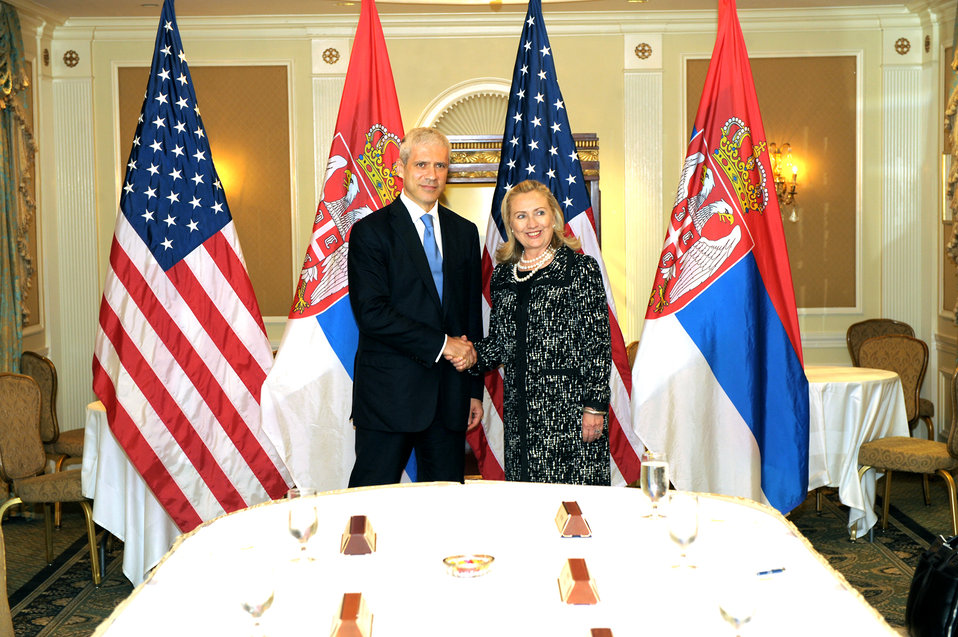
Secretary Clinton Meets With Serbian President Tadic

U.S. Secretary of State Hillary Rodham Clinton meets with Serbian President Boris Tadic at the Waldorf Astoria in New York, New York, on September 23, 2011.